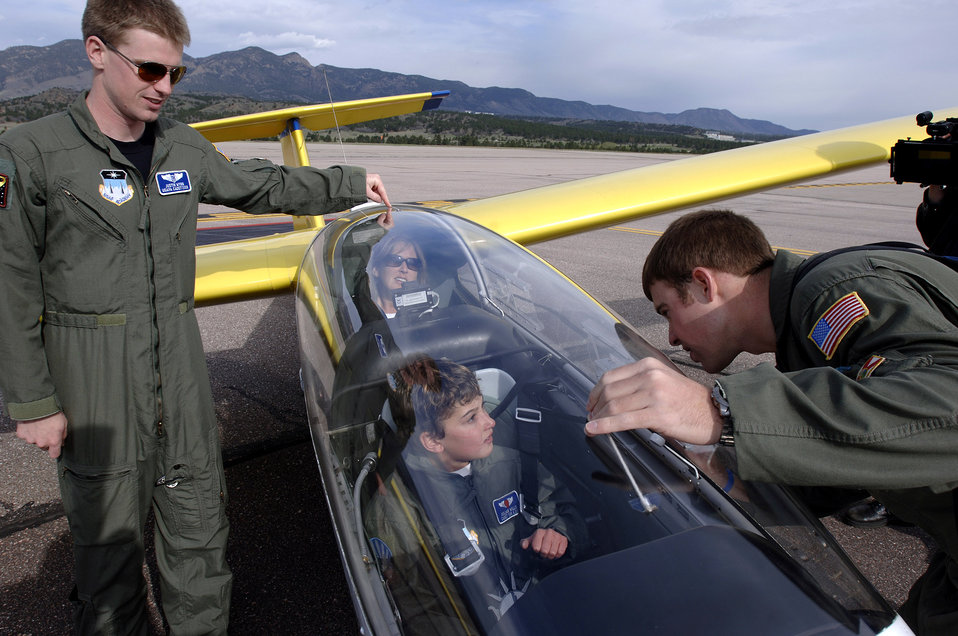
Academy honors 'Cadet for a Day' in Colorado

Sophomore cadets Justin Wynn and Erik Gonsalves talk to 10-year-old Julian Willis and his mom JoAnne Willis about an Academy glider on the flightline at the U.S Air Force Academy, Colo. The Make-a-Wish Foundation and the Air Force Academy made Julian a